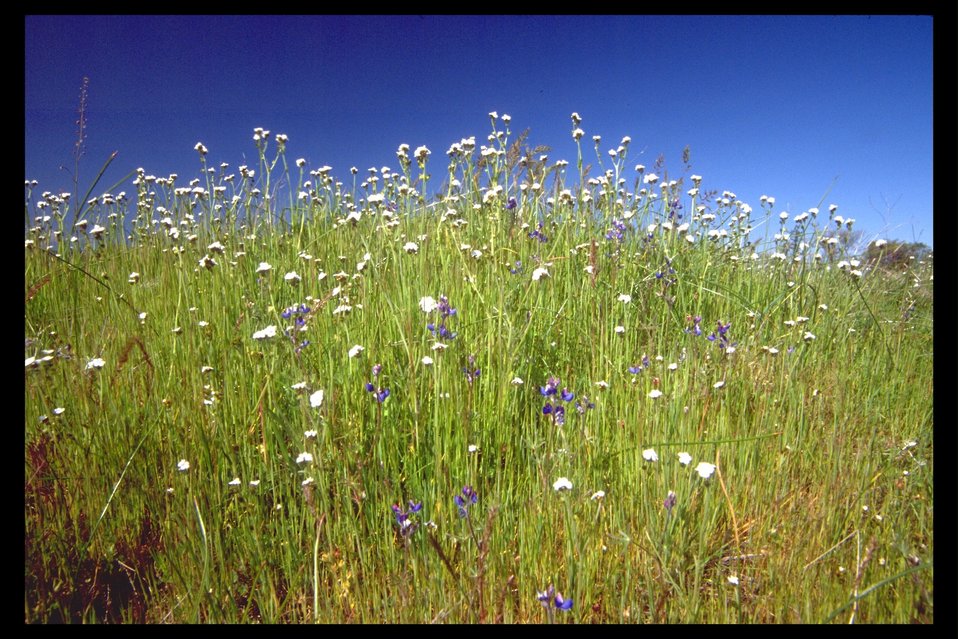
Popcorn Flower (Plagiobothrys nothofulvus) at Upper Table Rock.